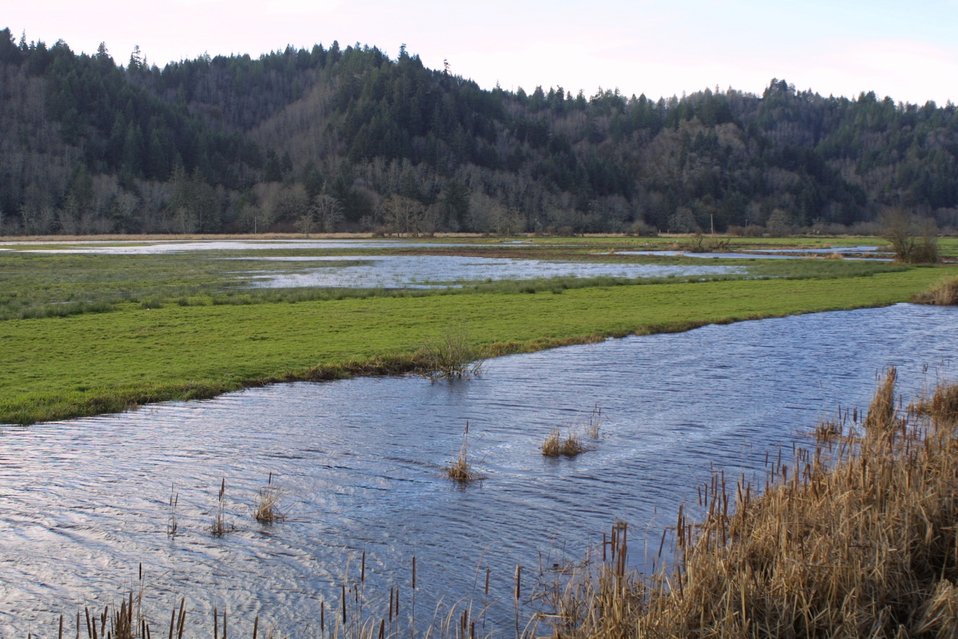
Wetlands at the Dean Creek Watchalbe Wildlife site near Reedsport, Oregon.